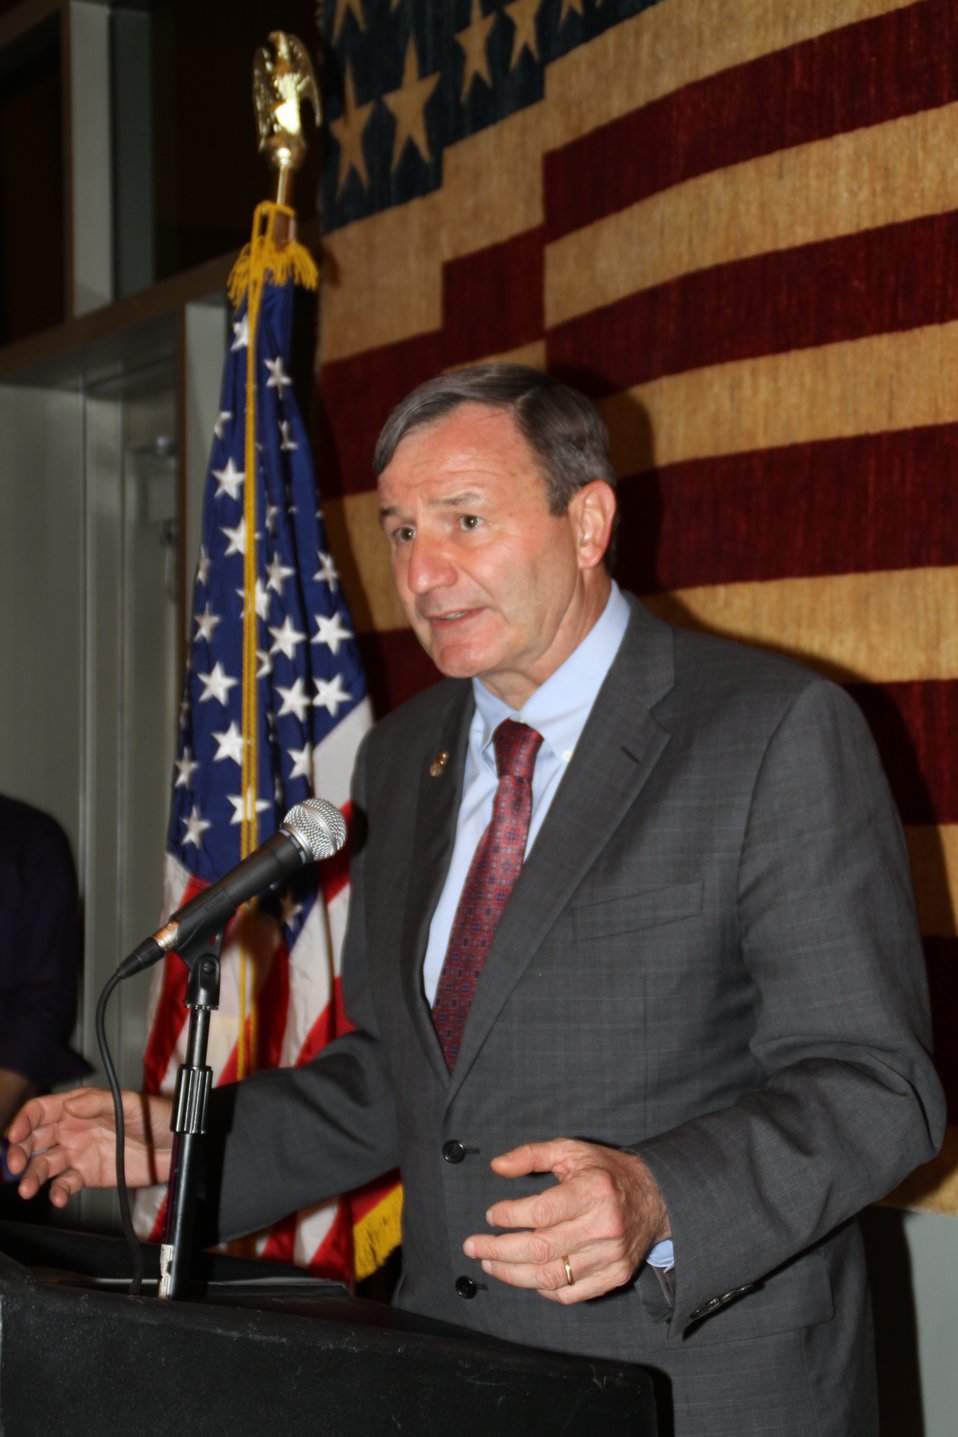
US Embassy Town Hall July 21, 2010

Ambassador Eikenberry addresses a crowd at the Town Hall.